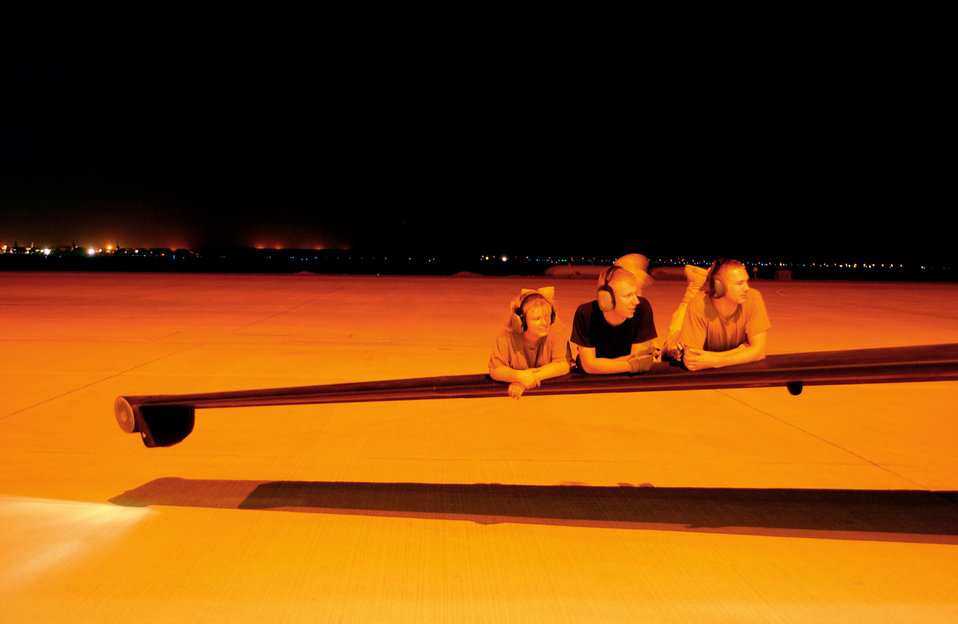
Balancing act

OPERATION IRAQI FREEDOM -- Air Force members deployed from the 9th Aircraft Maintenance Squadron, Beale Air Force Base, Calif., to the 363rd Expeditionary Aircraft Maintenance Squadron, ride a wing to balance out a U-2 Dragon Lady.